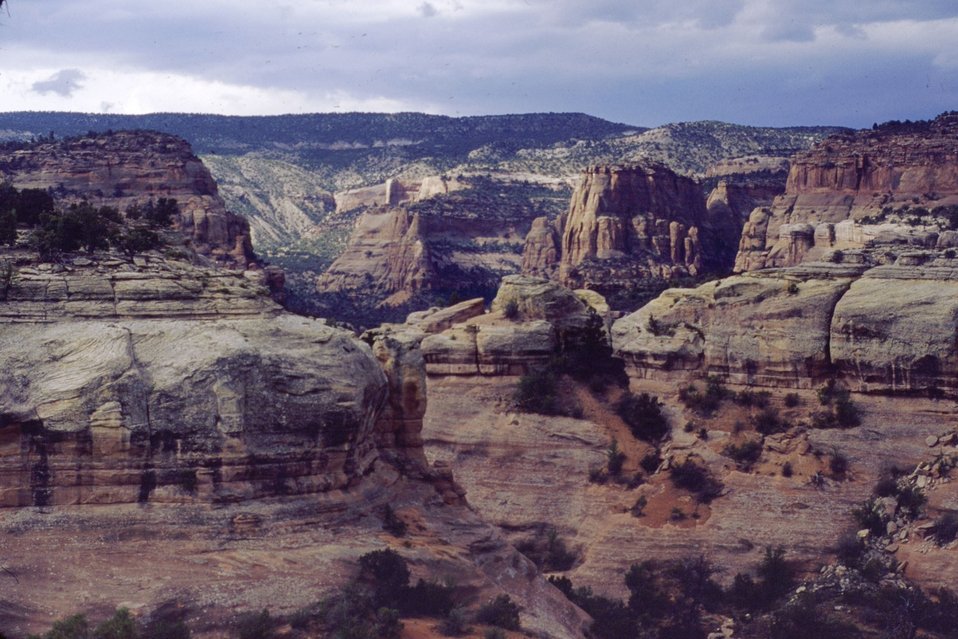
High Plains & Platues